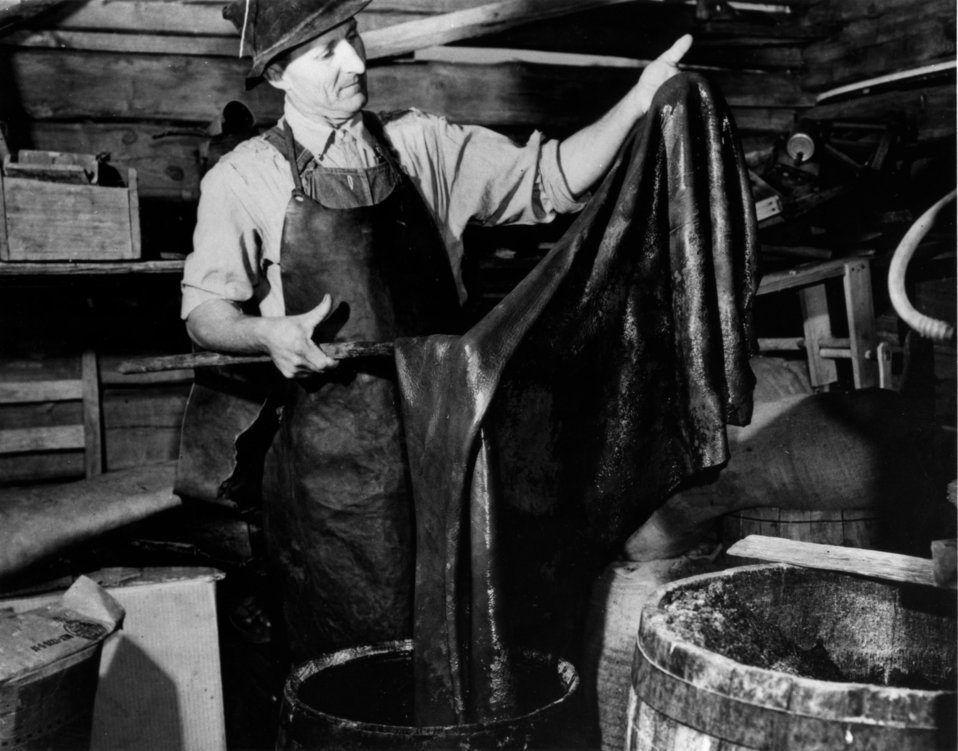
Early settlers at Oak Ridge